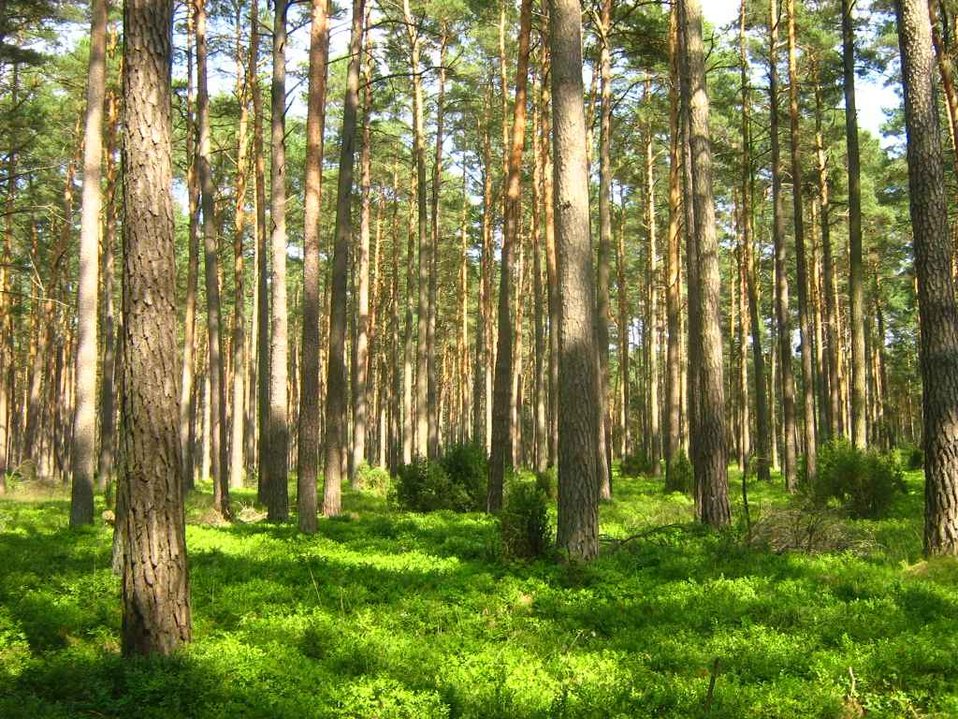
Deutsch: Kiefernwald in der Ueckermünder Heide bei Rothemühl.